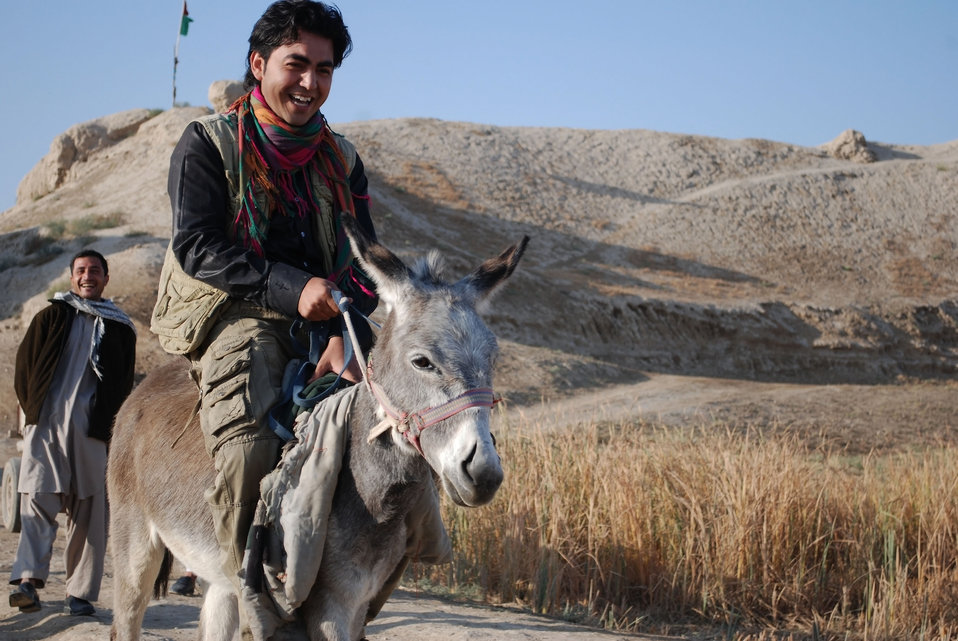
'On the Road' in Balkh Province